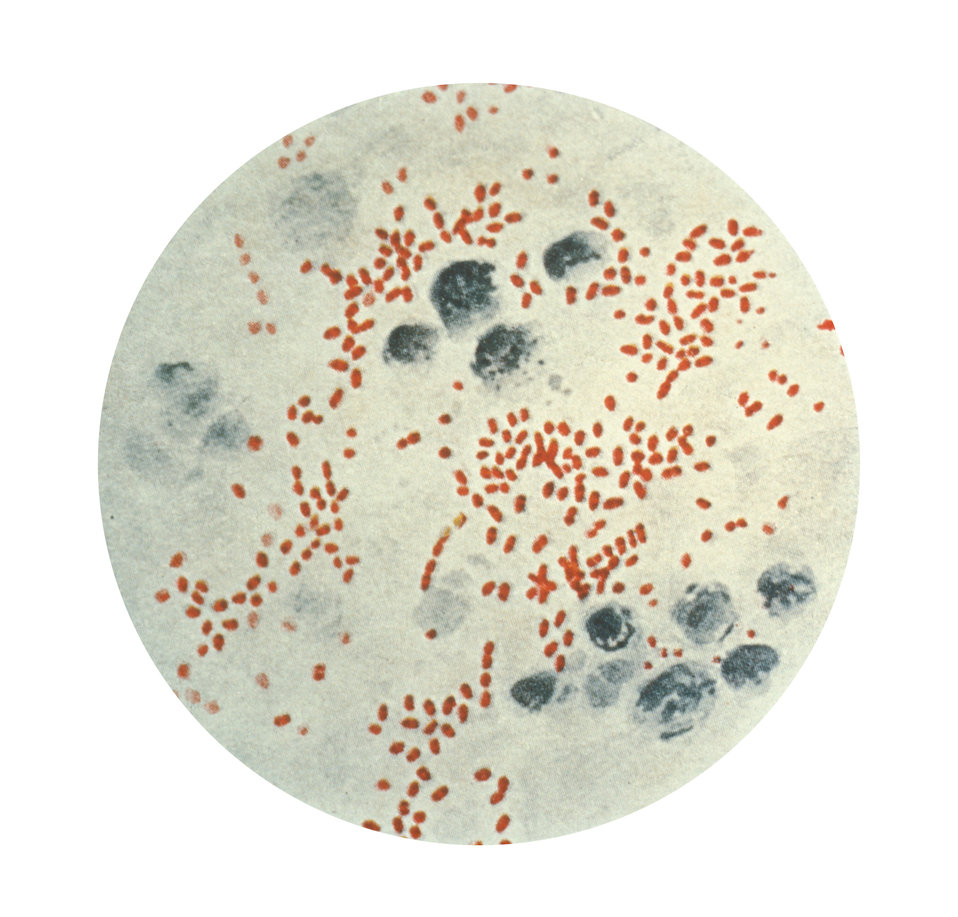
Photomicrograph of Yersinia (Pasteurella) pestis, sometimes referred to as Bacillus pestis.